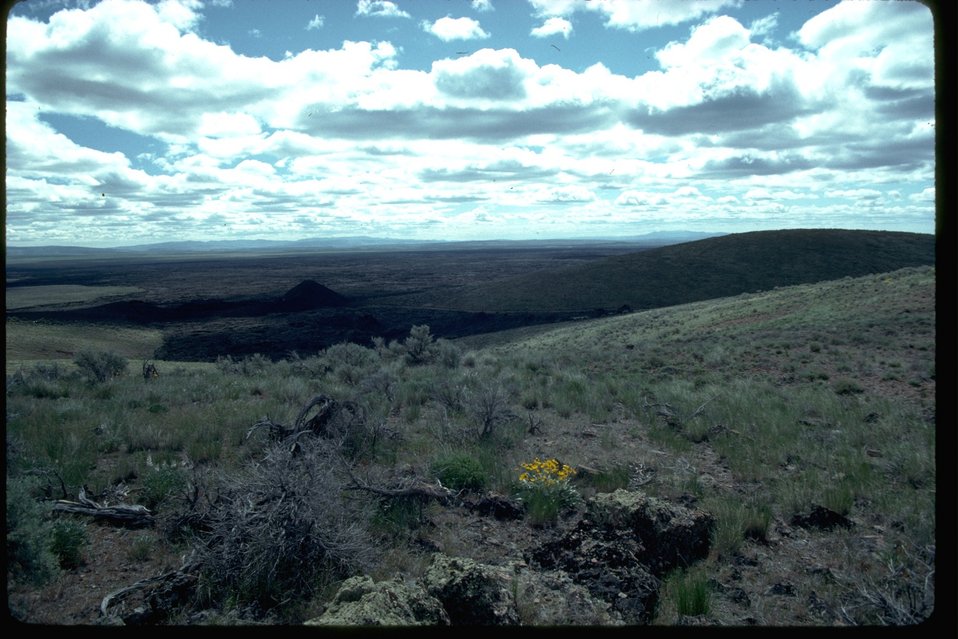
Wildflowers at Jordan Craters Wilderness Study Area. OR 3-128.